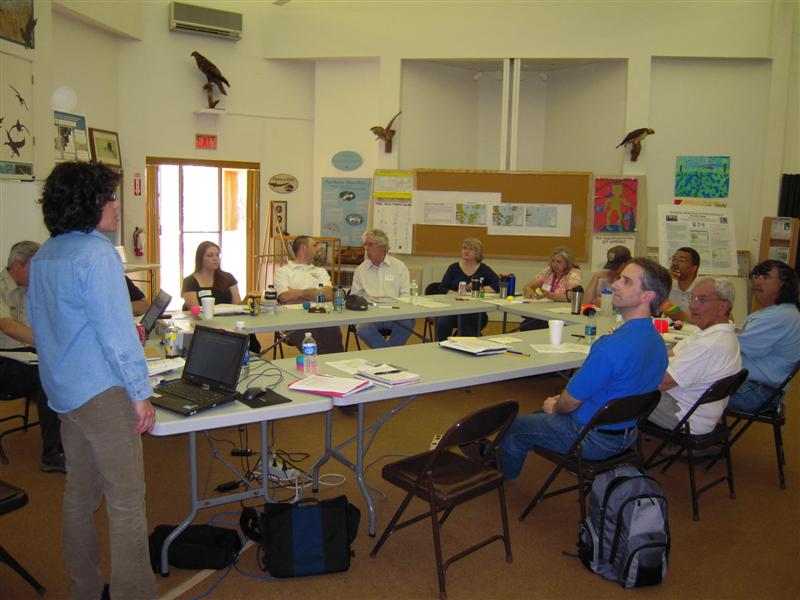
Collaborative Conservation

“One of our goals is to engage partners and pave the way for future collaborations,” said Dorie Stolley. “It’s collaborative conservation – you get everybody in the same room and recognize the value of their input.”